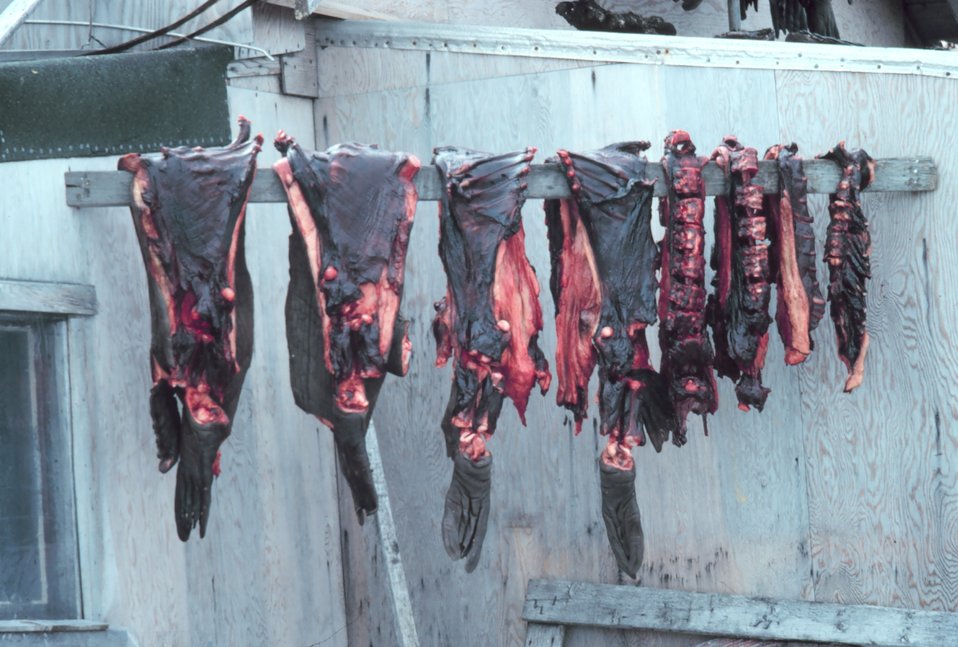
Drying seal meat.